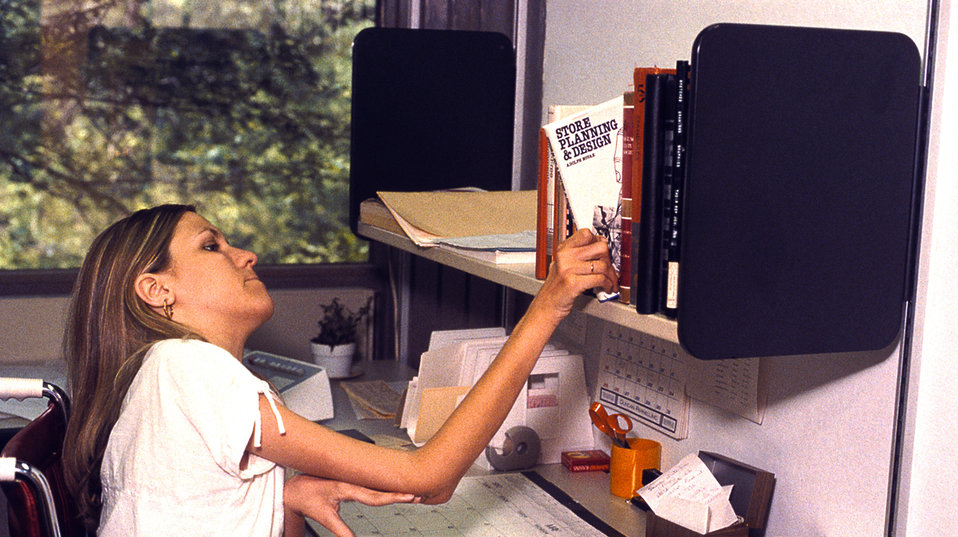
At her desk, and seated in her wheelchair, this mobility-challenged woman was photographed while attempting to retrieve a book from an overhead shelf, illustrating why it is so important to take into account all ergonomically-related situations when designing workplace environments. Ironically, this person was about to reference a book entitled, 'Store Planning & Design'. Note that even though her desk and surroundings comply with design codes governing 'reach range', the self is still situated too high for a person who's reach is limited by a physical disability. A height-adjustable desk and shelves, mounted on their wall-hung tracks and brackets, would have made accommodating height, reach and strength limitations possible.